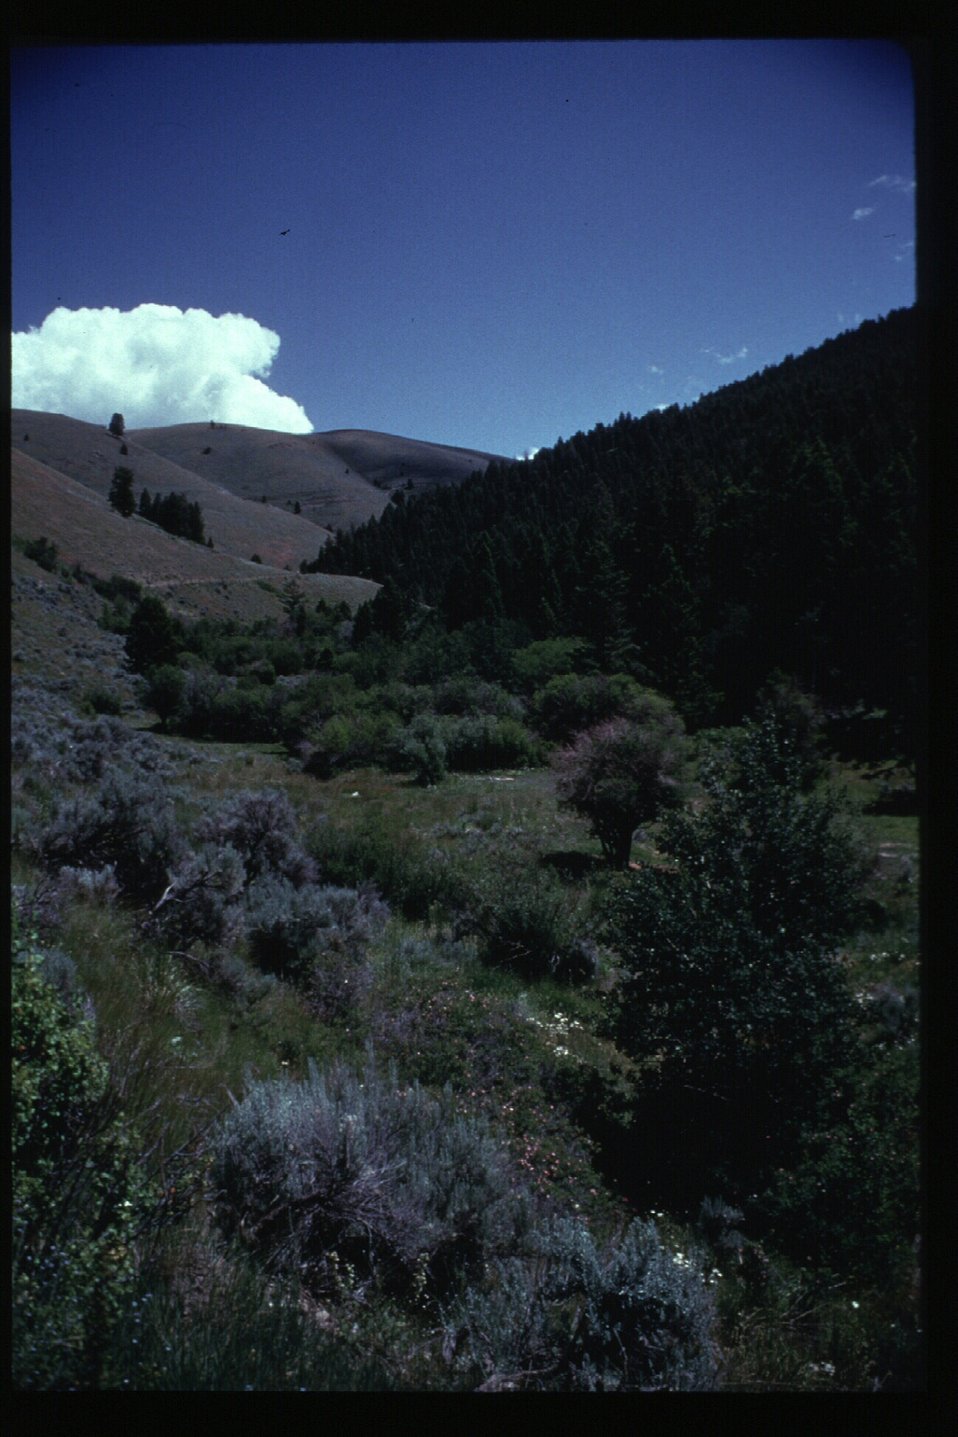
Lewis and Clark National Historic Trail Salmon Field Office UCSC Upper Columbia Salmon Clearwater